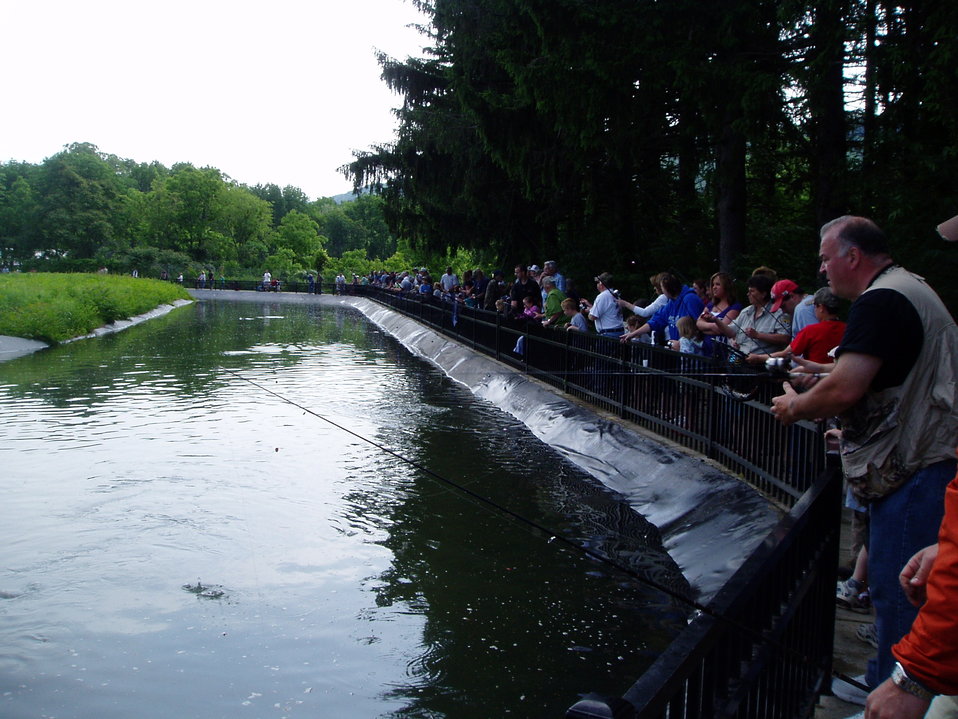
Northeast Fishery Center's Annual Fishing Event

Families fishing at the Northeast Fishery Center's annual fishing event in Lamar, PA.